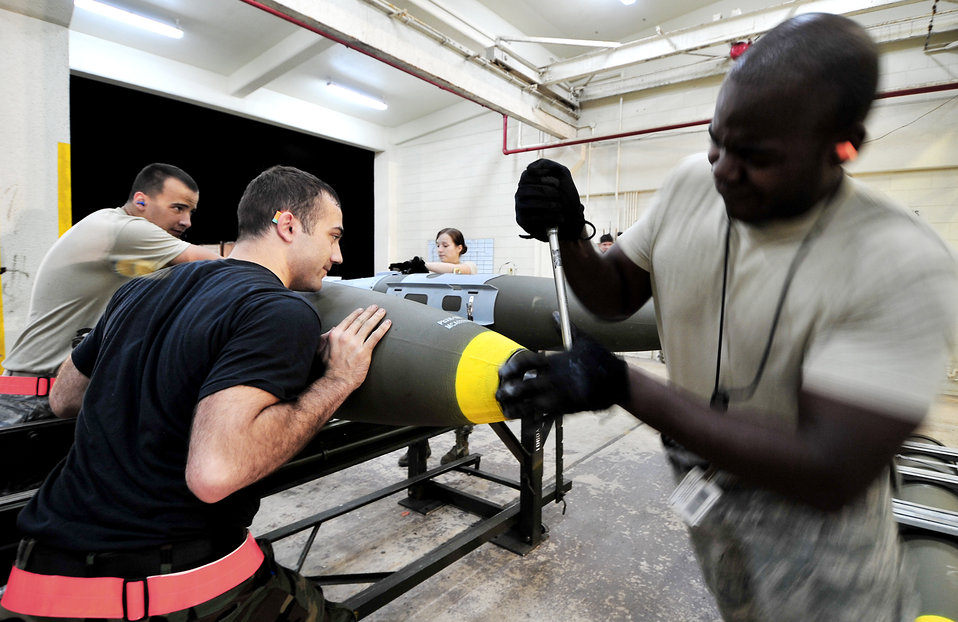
Kadena Airmen test readines during exercise

Airmen from the 18th Munitions Squadron build Mark-83 bomb bodies during a base exercise March 24, 2010, at Kadena Air Base, Japan. The 18th Wing participated in a local operational readiness exercise to test base Airmen's ability to defend Japan and maintain peace and stability in the Pacific region.